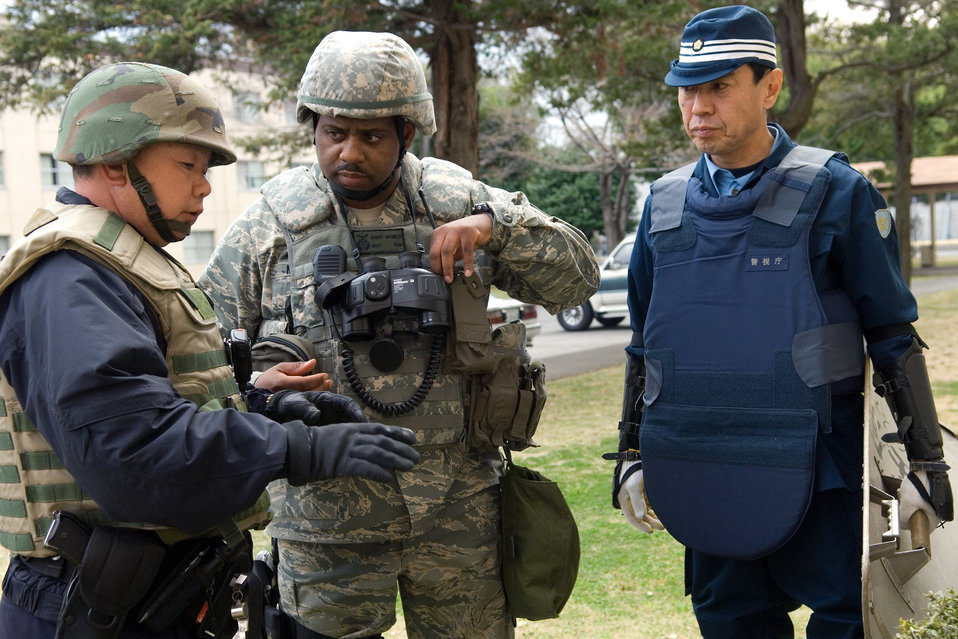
Yokota Airmen train with Japanese police

Master. Sgt. Robert Maginley confirms a